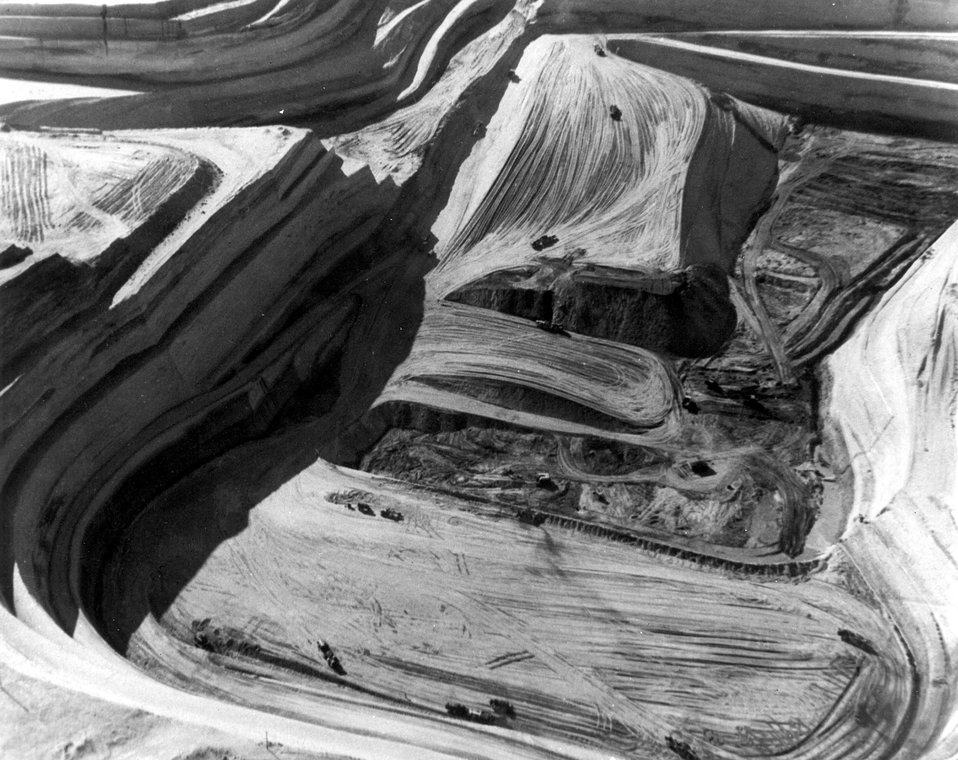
Aerial of the Frazier Lamac uranium open pit mine of Western Nuclear, Inc. c. 1962